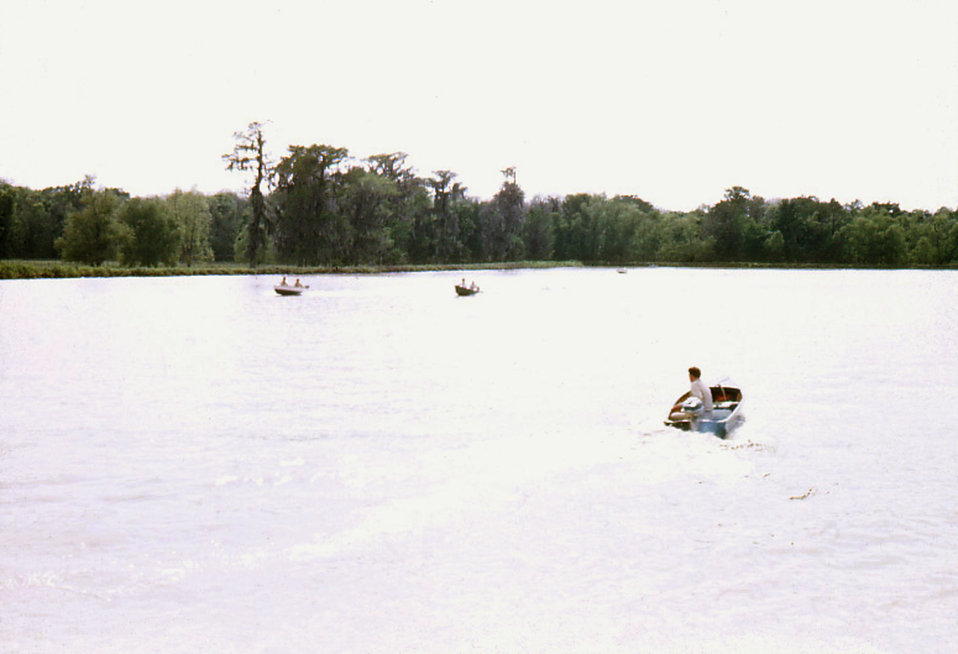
This historic image depicted a number of Carville, Louisiana Leprosarium patients, motor boating out on Lake Johansen on a beautiful day, for some of the patients owned boats while at the hospital during their treatment. Lake Johansen was named after one of the Leprosarium's Chief Medical Ofiicers, Dr. Frederick A. Johansen."Patients of the U.S. Marine Hospital in Carville, Louisiana, produced a set of 35 mm slides around 1950 from which this image was derived. In 2002, a patient's son donated the set, the only one known in existence, to the museum. The father, a patient at Carville for several years, brought these slides home around 1950 to give his family a snapshot of life at the national leprosarium. The act of quarantining patients for leprosy (HD) remained law in the state of Louisiana until 1957."